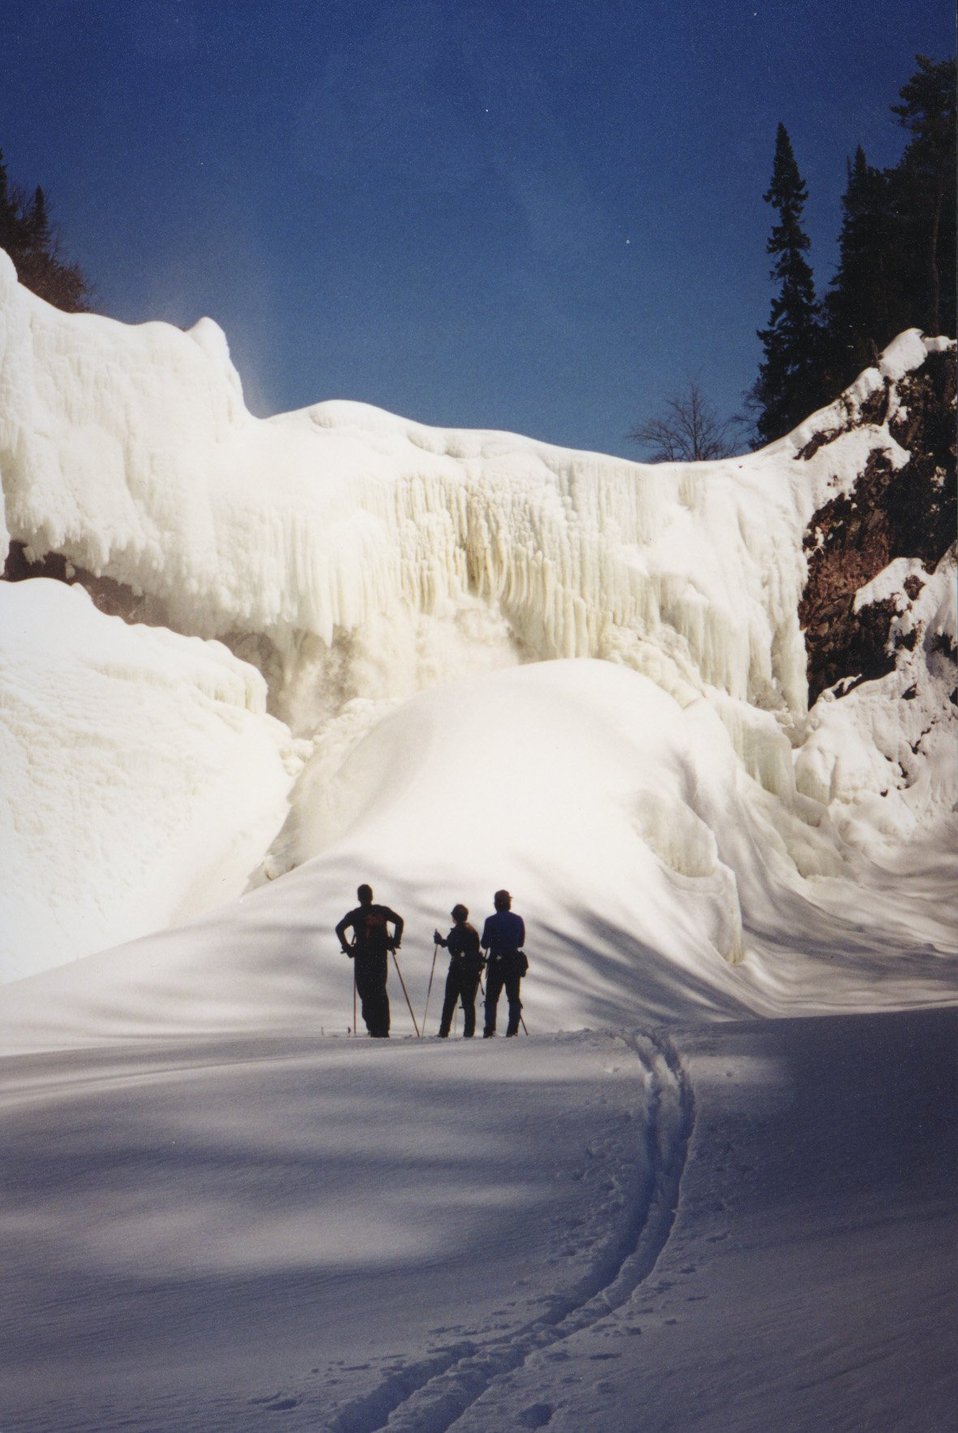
Lake Superior